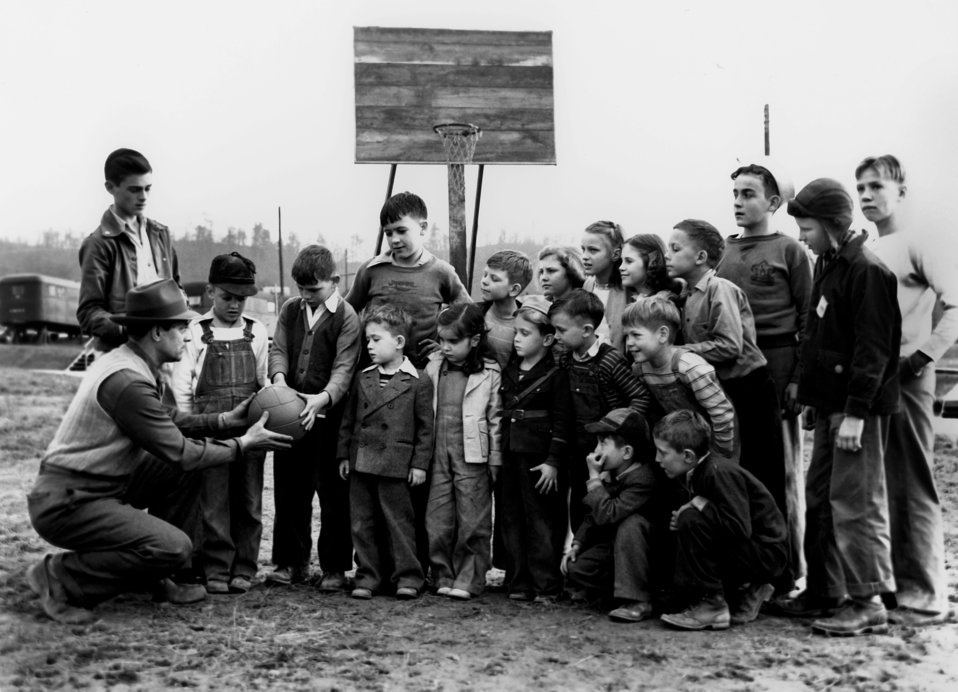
Gamble Valley Play Ground with Shep Lauter Oak Ridge 1945

Pro337-4 DOE photo Ed Westcott 2-1945 Oak Ridge Tennessee